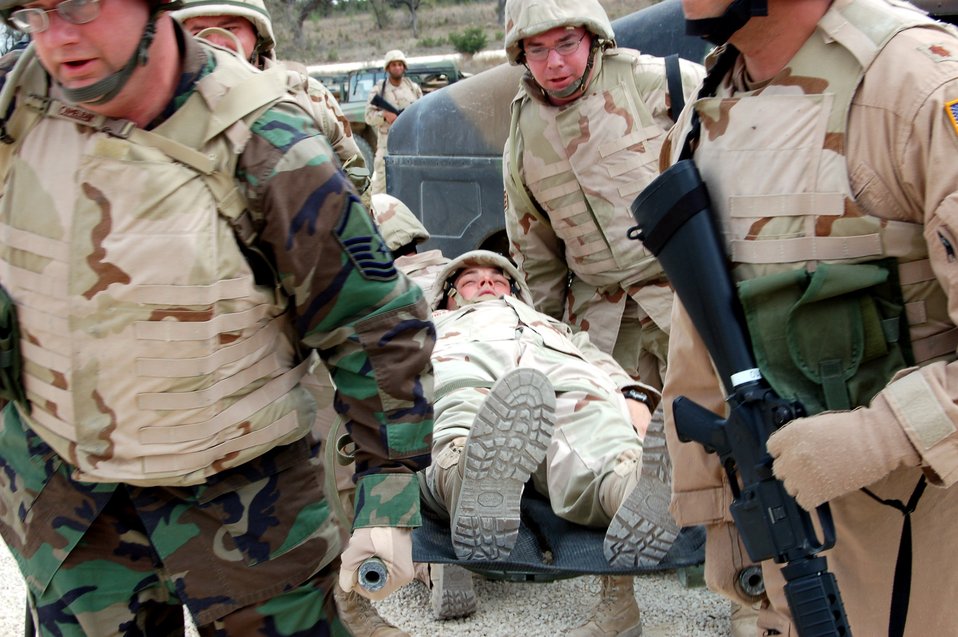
Airmen receive Iraqi training

Students at the specialized mission course lift Tech. Sgt. Randy Davidson during a simulated convoy operation held at Camp Bullis, Texas. The two week course is the students first step in a mission that will help the Iraqi air force rebuild their technical schools.